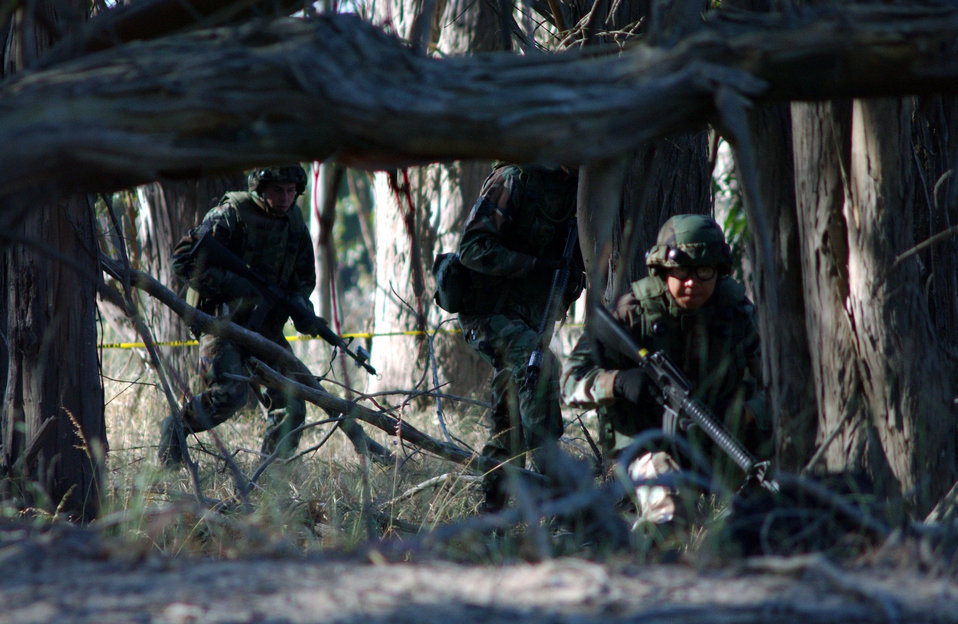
Starting the 'Challenge'

VANDENBERG AIR FORCE BASE, Calif. -- (From left) Staff Sgts. Matthew Tussey, Jon Blackmon and Airman 1st Class Thanongsack Phanda attack opposing forces during the security forces competition at Guardian Challenge here May 4. The Airmen are assigned to the 21st Space Wing at Peterson Air Force Base, Colo. Guardian Challenge, the world's premier space and missile competition, is a four-day event held annually. It tests the wartime readiness of Air Force Space Command's Airmen in spacelift, ICBM operations, communications, maintenance, helicopter operations, security forces and chef food preparation.